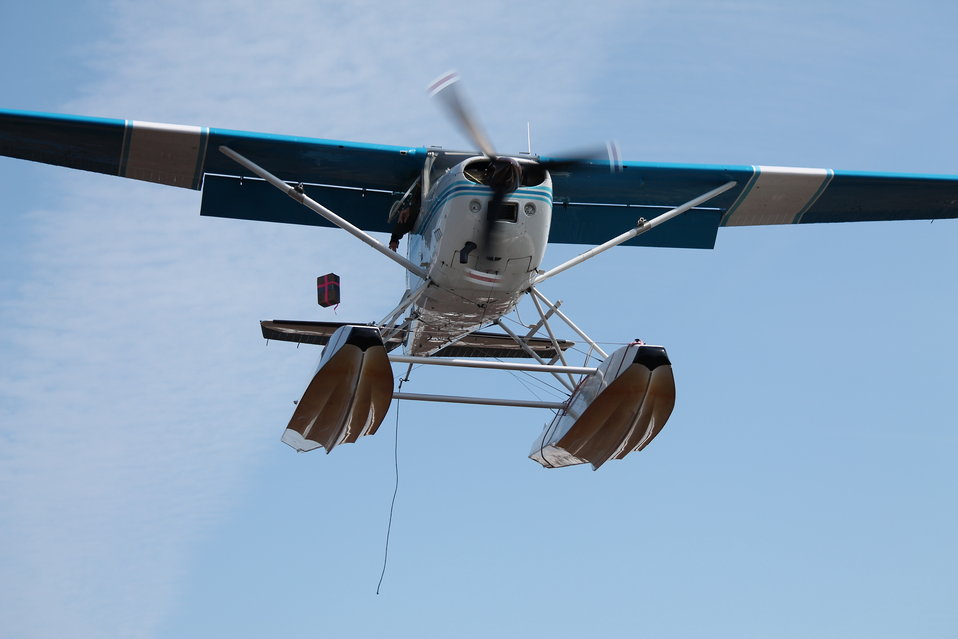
Air drop!!

Sometimes a plane can not land in a particular area, in which case an air drop may occur to supply the camp with food and other supplies that they might need.

USFWS Yukon Delta NWR